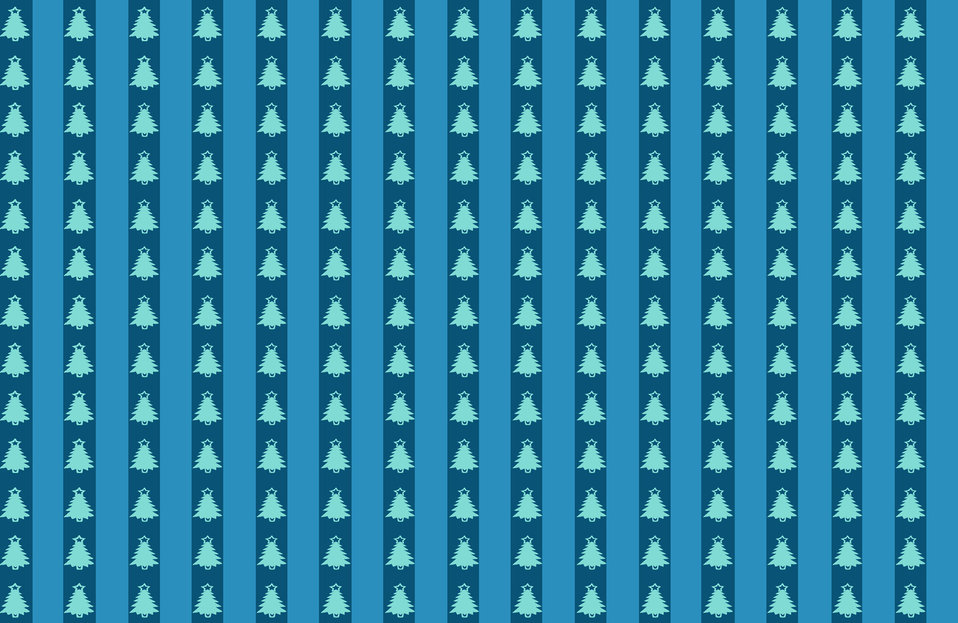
Christmas trees blue background

Blue christmas trees on a striped blue background.